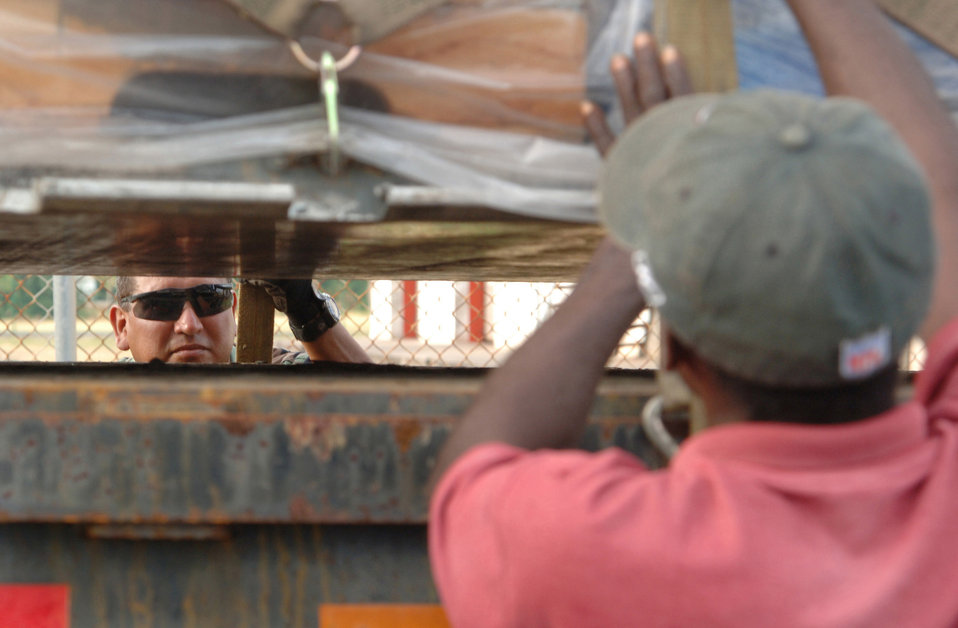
Reserve engineers in Saint Lucia

Tech. Sgt. Arthur Marin and Patrick James secure cargo on a flatbed truck on the flightline for transport Friday, April 7, 2006. The cargo is for a project which will include building an operations center and barracks for the police force supporting St. Lucia's counter-drug operations. Sergeant Marin is with the 433rd Civil Engineer Squadron at Lackland Air Force Base, Texas. Mr. James is a Saint Lucian.